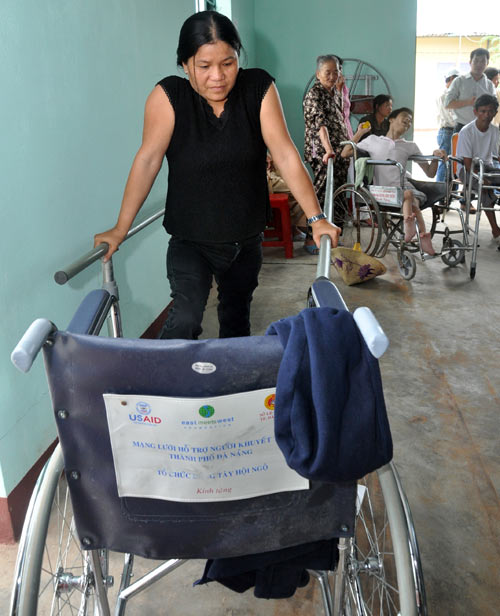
Community Rehabilitation Unit, Danang

Ho Thi Thanh, who came down with polio at the age of four, takes advantage of the USAID-supported rehabilitation center in Hoa Hiep Nam ward in Danang.